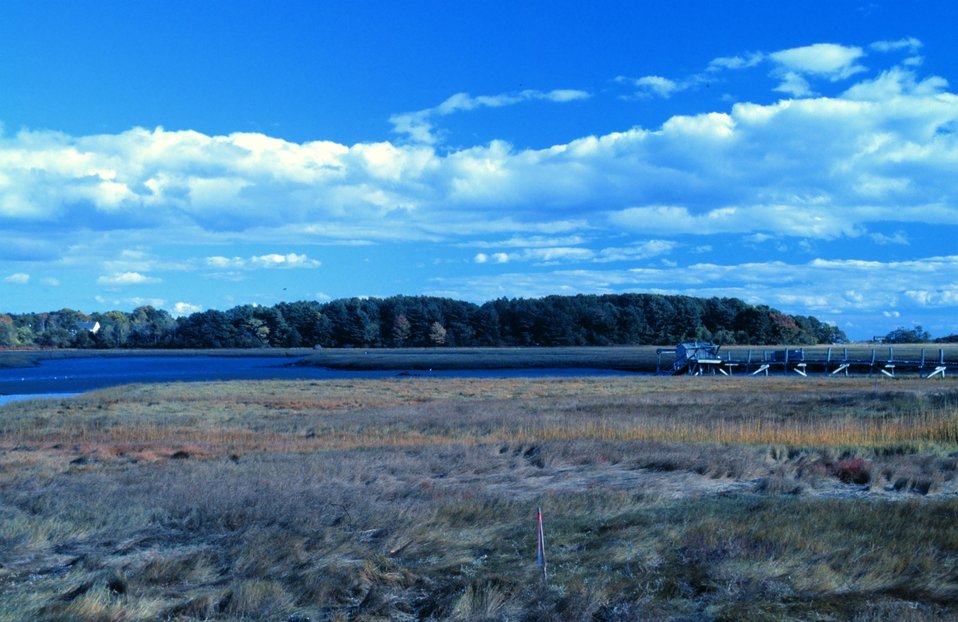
A view of wetlands at Great Bay National Estuarine Research Reserve.